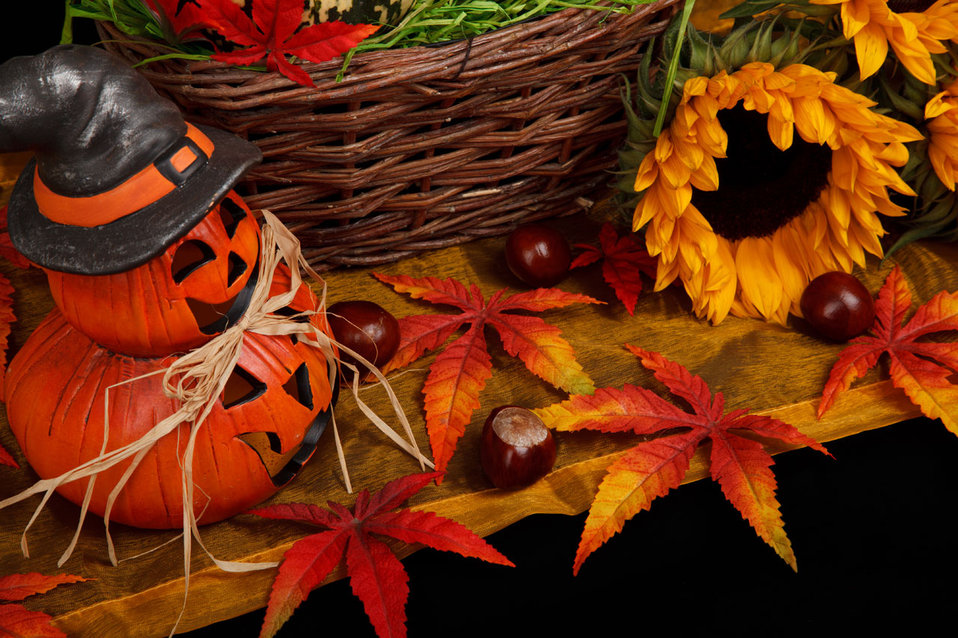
Halloween autumn theme

Halloween still life autumn decoration on dark background.